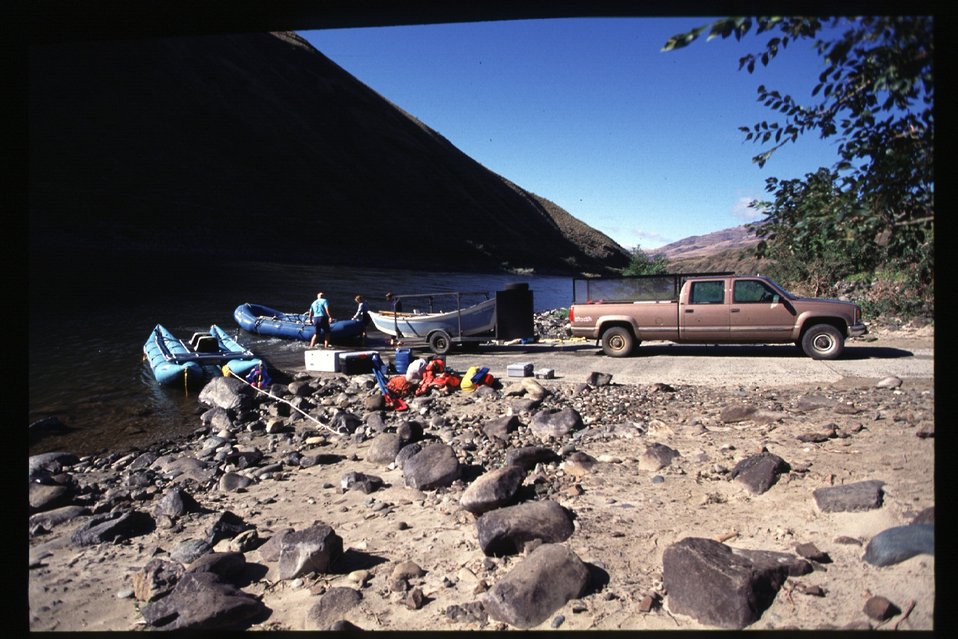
Hammer Creek Boat launch for dorys and rafts Lower Salmon River Cottonwood Field Office UCSC Upper Columbia Salmon Clearwater District